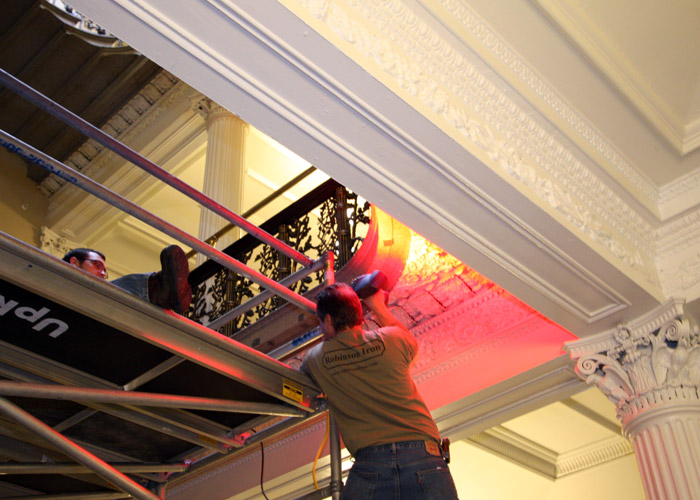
Historic Restoration of the Treasury Stairwells

A portable laser scanning equipment is used to record in three dimensions some of the architectural details of the West Wing stairwell.